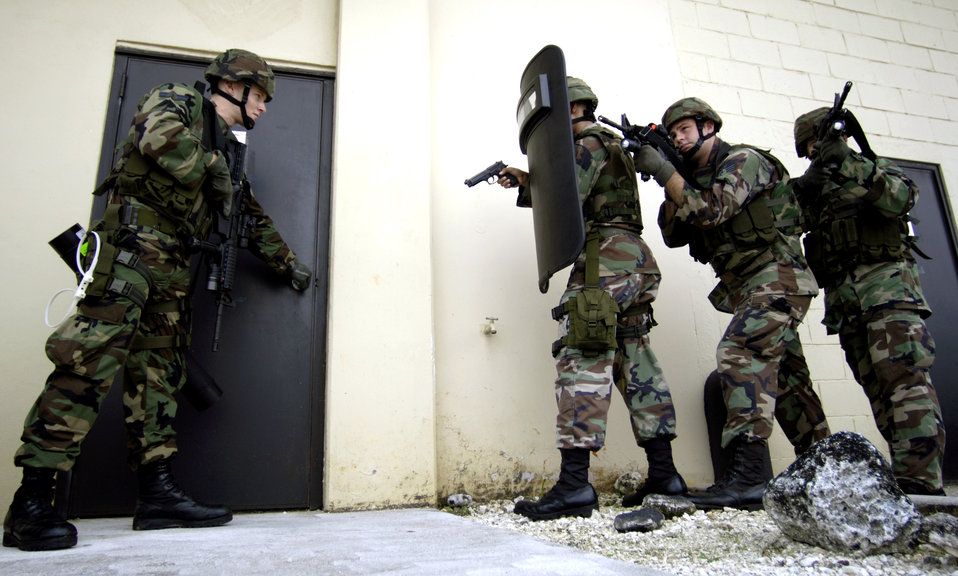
Tactical entrance

ANDERSEN AIR FORCE BASE, Guam (AFPN) -- Airmen from the 613th Security Forces Squadron practice building entrance tactics during an exercise. The squadron is part of the 613th Contingency Response Group. It is changing its designation Jan. 19, after which it will be the 36th CRG. The Airmen conducted this training Jan. 9.